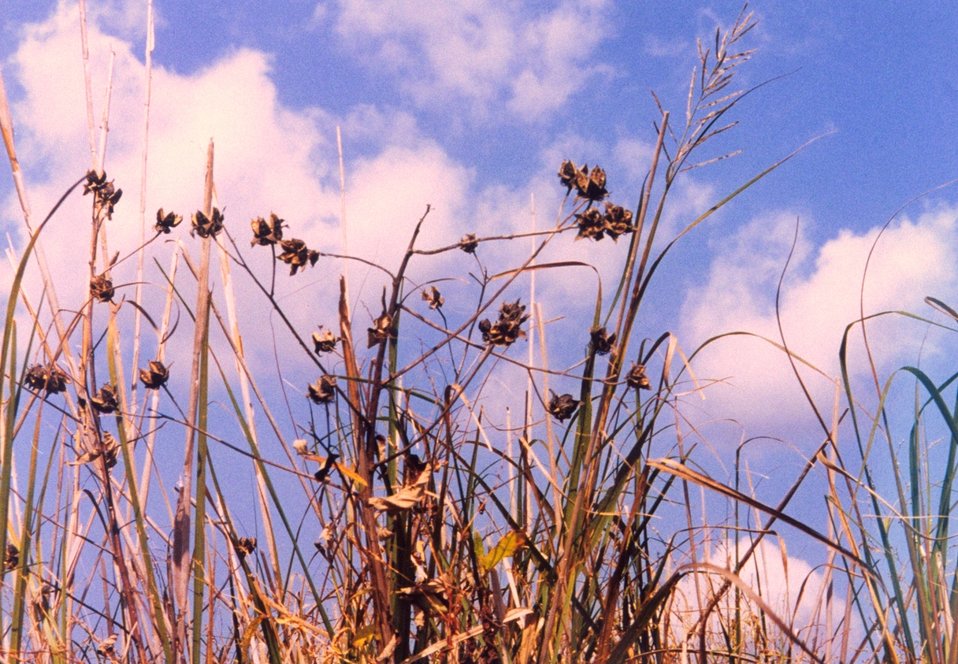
Marsh hibiscus seed pods. Also known as Eastern Rose Mallow (Hibiscus moscheutos.)